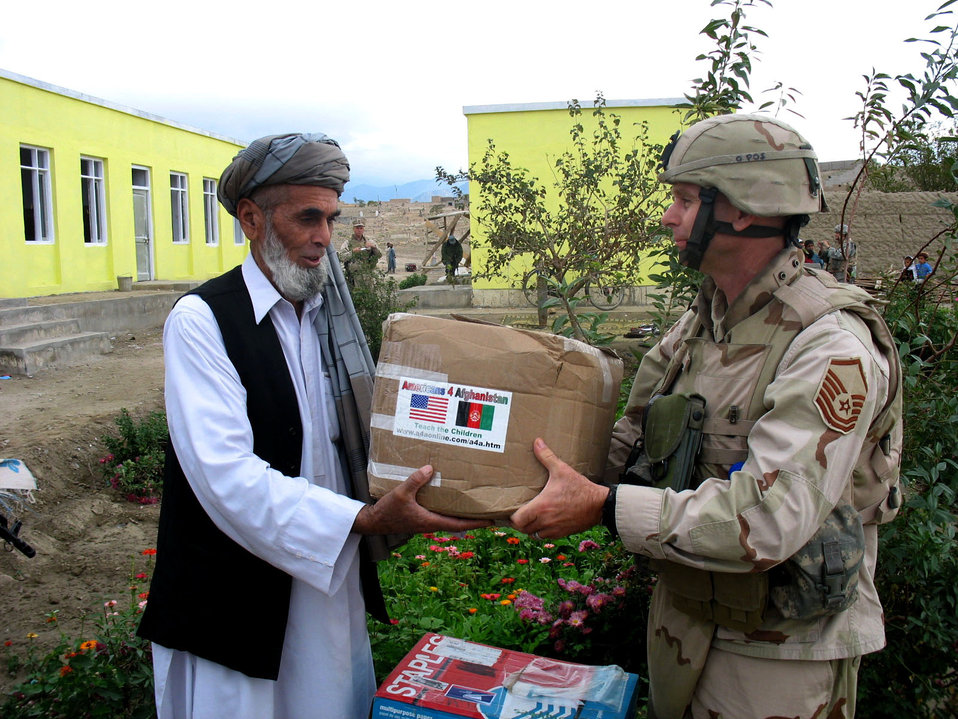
PRT delivers supplies to Afghan schools

Master Sgt. Joseph Sawyer hands a box of school supplies to Malek Mohammad, the Alikheyl Primary School principal, during a humanitarian assistance mission Nov. 21 in Methar Lam City, Afghanistan. Sergeant Sawyer is the Methar Lam Provincial Reconstruction Team communications superintendent.